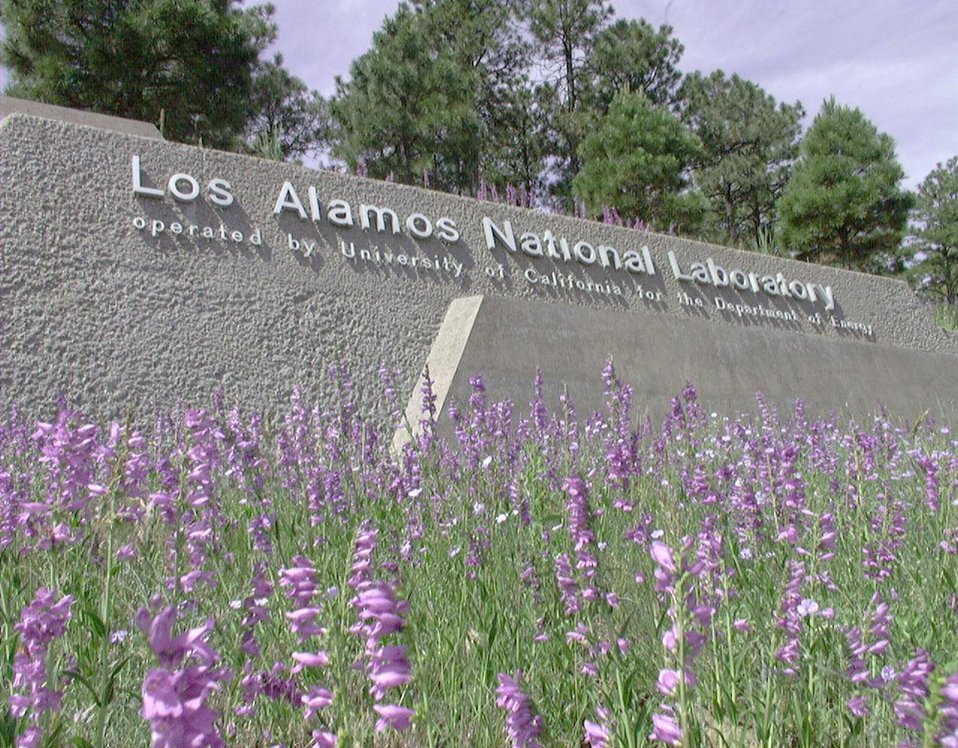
ENTRY WALL AT THE LOS ALAMOS NATIONAL LABORATORY, NEW MEXICO.

THE DEPARTMENT OF ENERGY'S LOS ALAMOS NATIONAL LABORATORY IS ONE OF THE LARGEST MULTI-DISCIPLINARY INSTITUTIONS IN THE WORLD. THE LAB'S TECHNICAL STAFF CONSISTS OF PHYSICISTS, ENGINEERS, CHEMISTS AND MATERIALS SCIENTISTS THAT WORK ON A WIDE RANGE OF SCIENTIFIC DISCIPLINES. THE STAFF ALSO COLLABORATES WITH UNIVERSITIES AND INDUSTRY IN BASIC AND APPLIED RESEARCH TO DEVELOP RESOURCES FOR THE FUTURE.